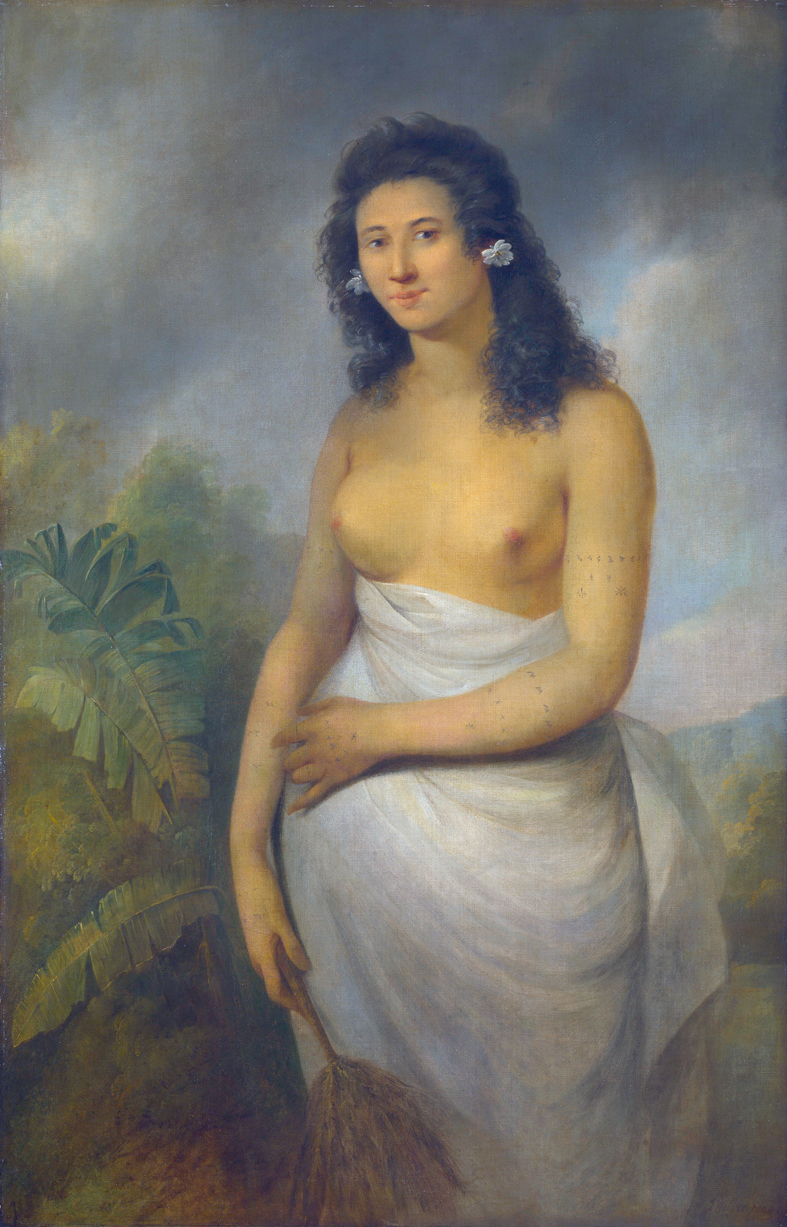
'The Tahitian Princess Poedua', painted by John Webber